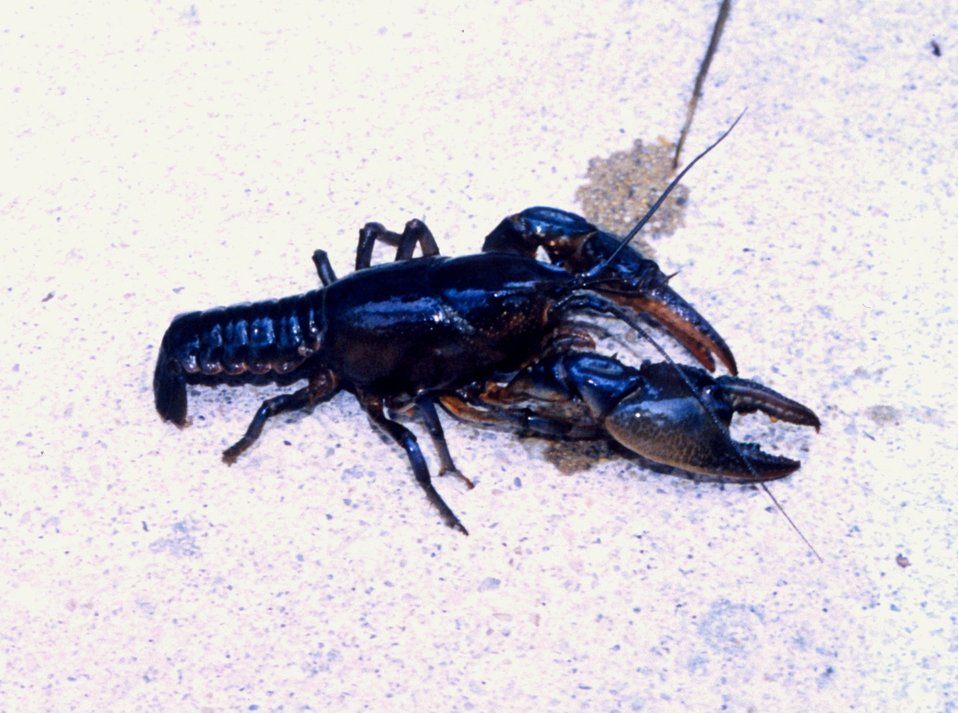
Crayfish found in a salt water pond near the Patuxent River.